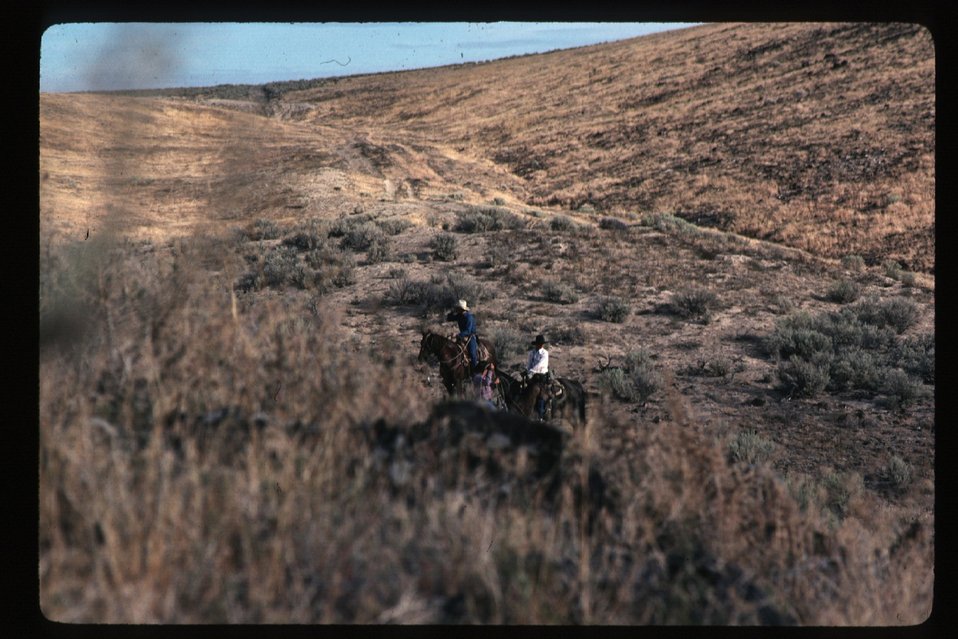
Wild Horse roundup Wild Horse and Burro Adoption Program LSRD Lower Snake River District